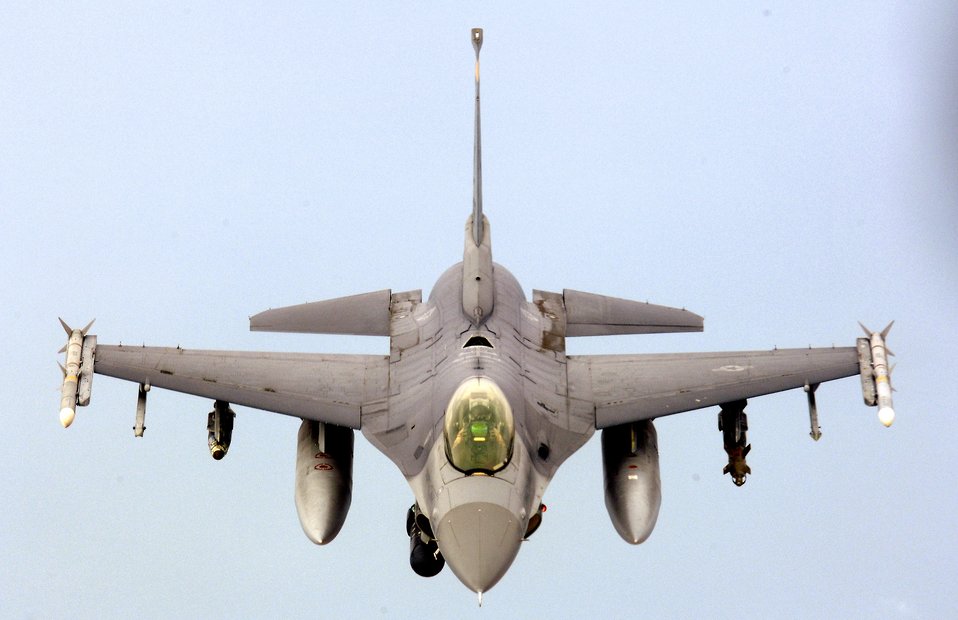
Feb. 25 airpower: F-16s provide watch

F-16 Fighting Falcons, like this fighter fly combat missions daily in support of Operation Iraqi Freedom. The F-16, a compact, multi-role fighter, is highly maneuverable and has proven itself in air-to-air combat and air-to-ground surface attack.